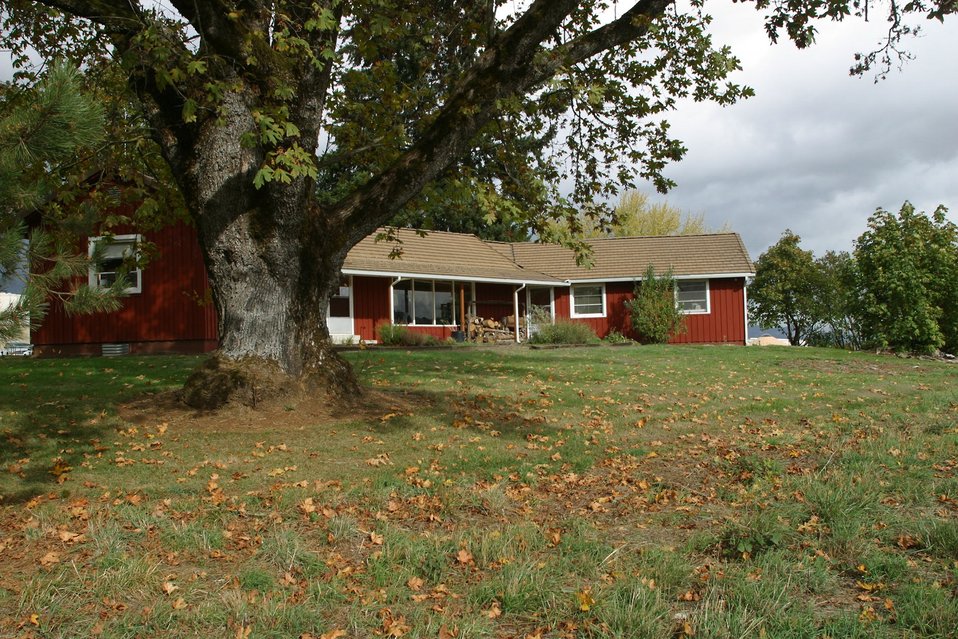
BLM's West Eugene Wetlands Project Office is centrally located near the Amazon and Willow Creek confluence in West Eugene.